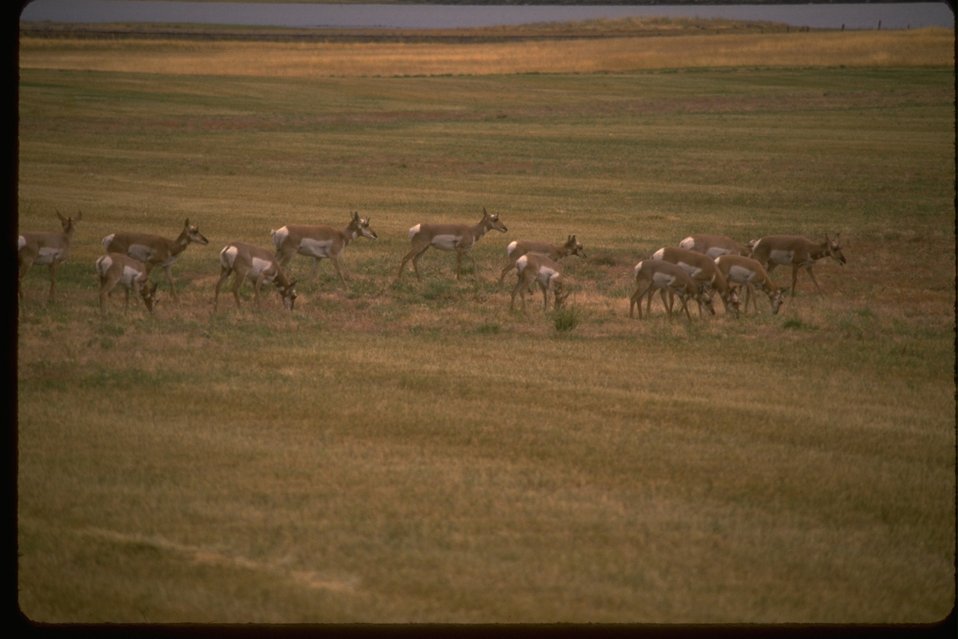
American Antelope